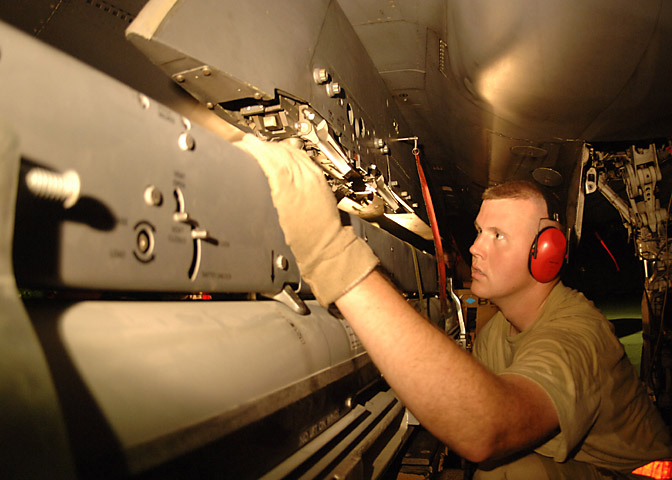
New weapon makes job of munitions specialists a 'snap'

Staff Sgt. Stephen Hansen, an F-15E weapons loader with the 379th Expeditionary Aircraft Maintenance Squadron, guides a weapons carriage into place beneath an F-15E Strike Eagle Oct. 5. The aircraft was about to fly the first combat sortie using the GBU-39/B small diameter bomb. The weapons carriage holds four small diameter bombs capable of striking four separate targets. Sergeant Hansen is deployed from Royal Air Force Lakenheath, England.